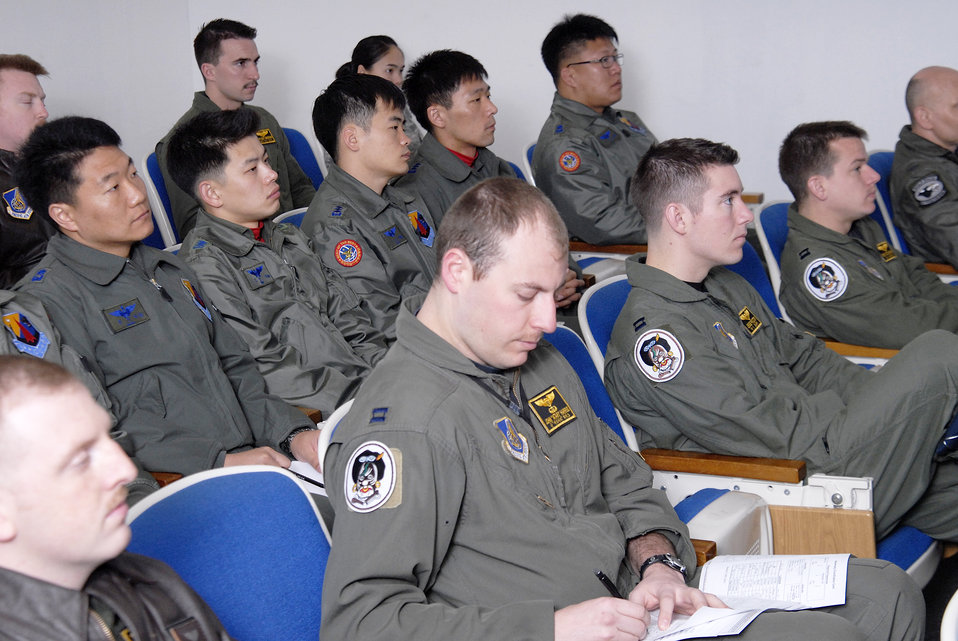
Buddy Wing brings Kunsan, South Korean airmen closer

Airmen from the South Korean air force's 11th Tactical Fighter Wing out of Daegu Air Base sit in on a mass flight briefing with members of the 80th Fighter Squadron March 10 at Kunsan Air Base, South Korea. The South Korean air force pilots are here in support of the Buddy Wing program, an operation designed to increase U.S. Air Force and South Korean air force interoperability.